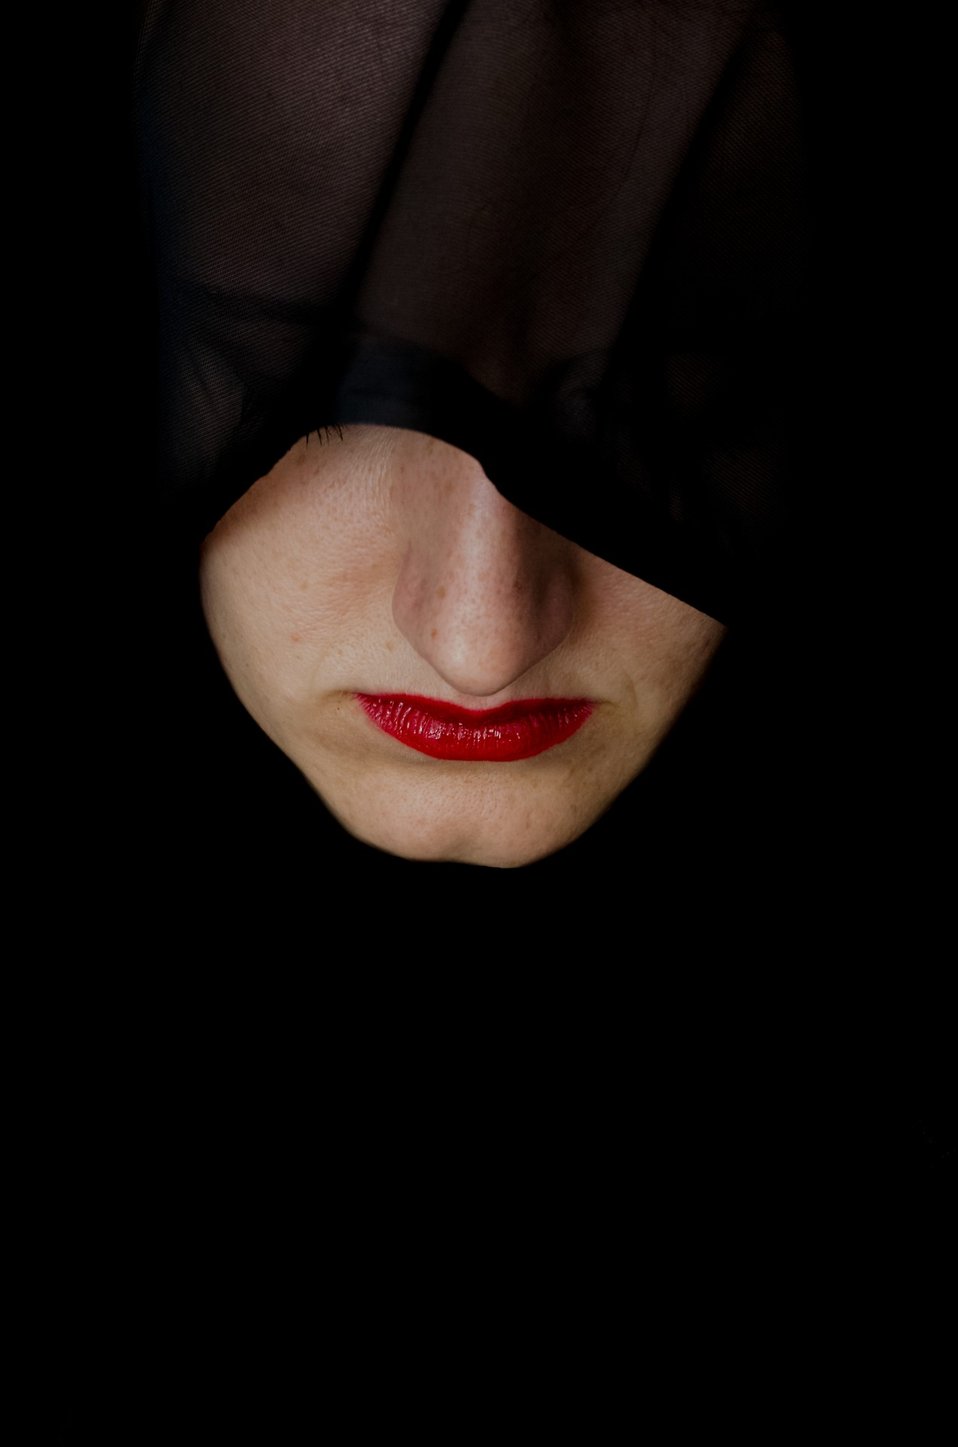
Woman and red lips.